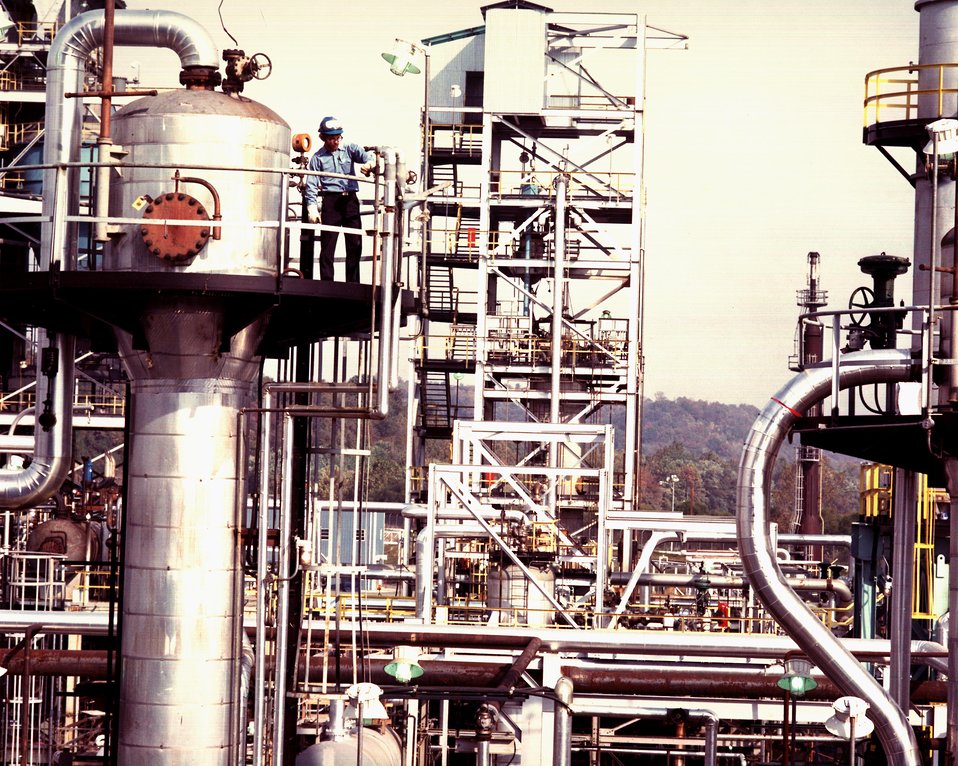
THE H-COAL PILOT PLANT WAS 95 PERCENT COMPLETE AT THIS TIME.